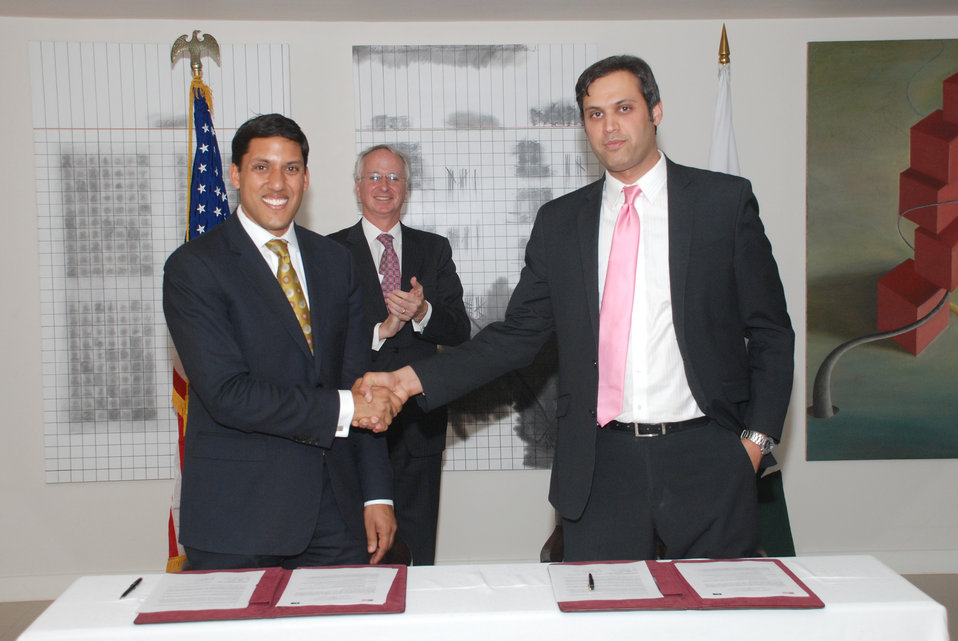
MoU Signing Ceremony between USAID and APF at Islamabad on April 18, 2012

Dr. Rajiv & Mr. Awais Khan Shaking hand